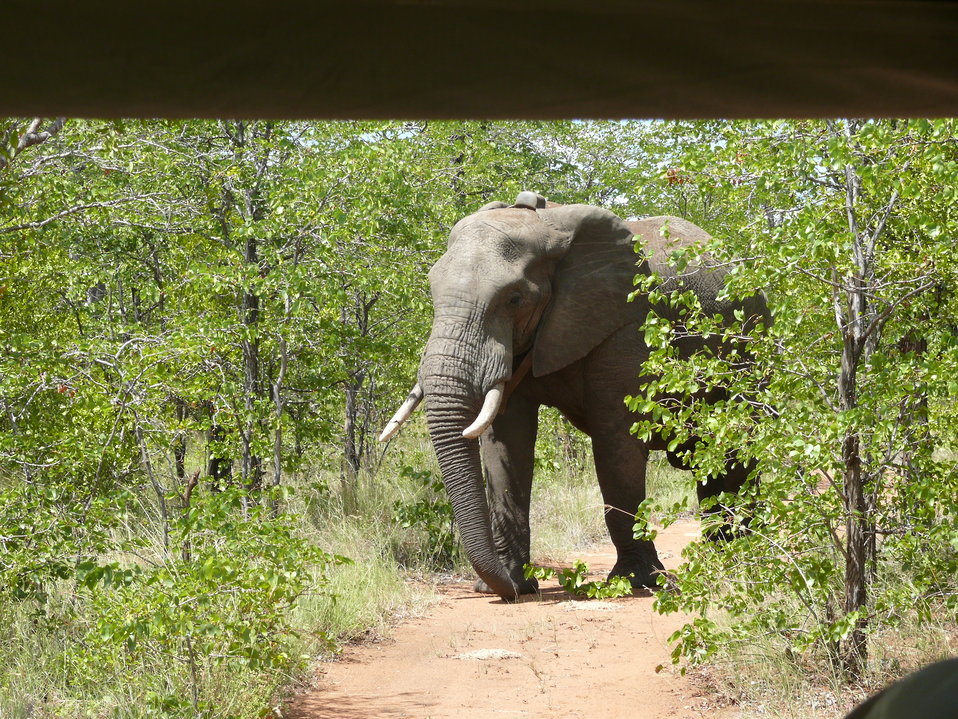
Elephant monitoring

Bull elephants are mostly solitary, but research support by USFWS has shown that they have an extensive social network.